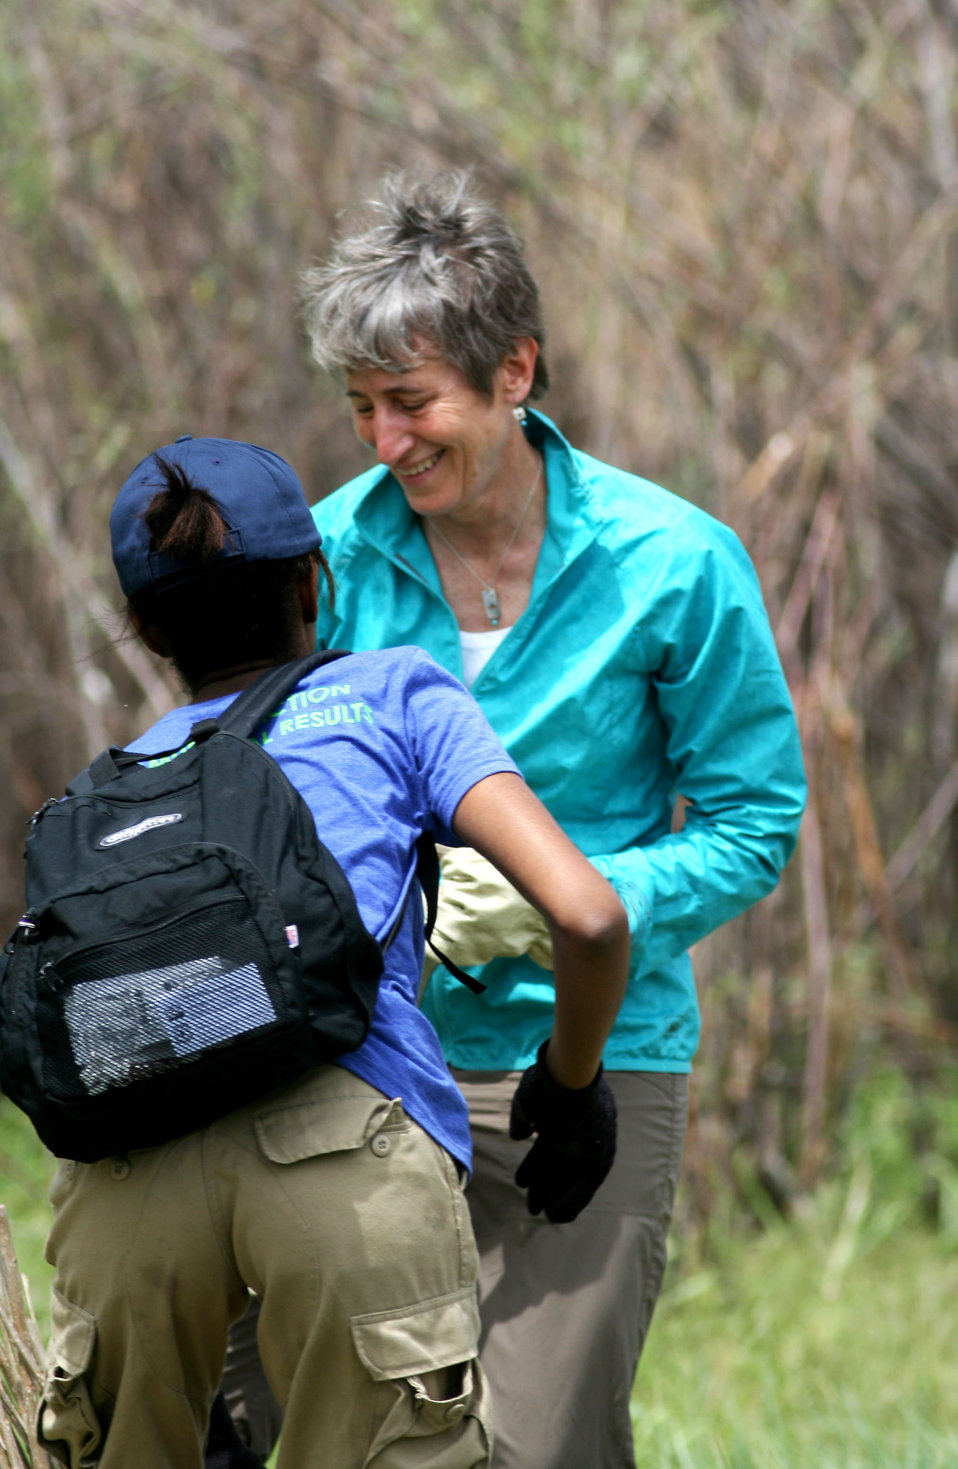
Sally Jewell and Makalah Emanuel

Interior Secretary Sally Jewell chats with Groundwork Denver's Makalah Emmanuel during a tree-planting project at the Rocky Mountain Arsenal in Commerce City.